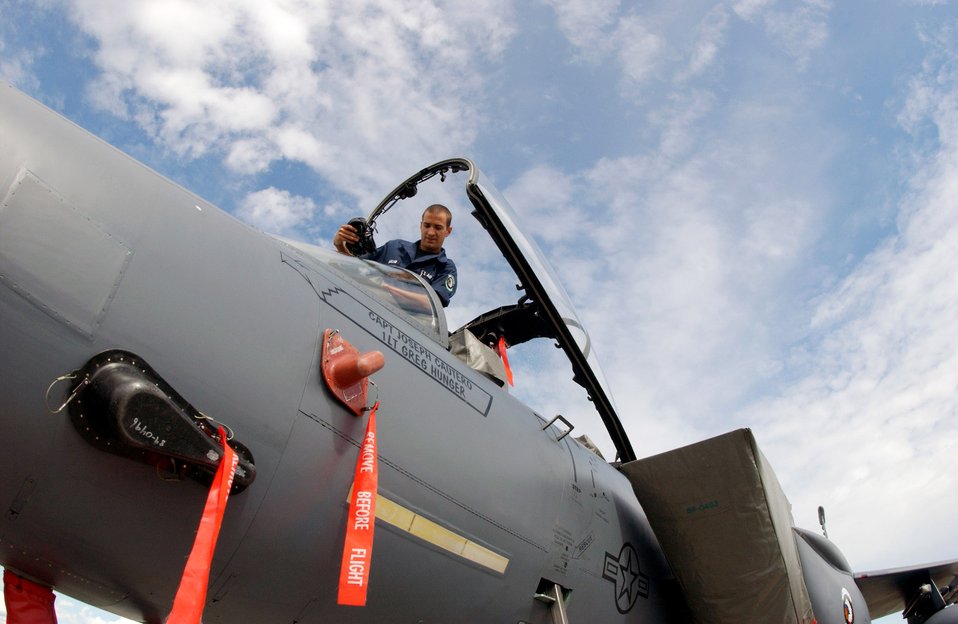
Maintaining aircraft at Red Flag-Alaska 2007

Airman 1st Class Harrison McMillan climbs into the cockpit as he and other maintainers toubleshoot the landing gear on an F-15E Strike Eagle July 12 that is participating in Red Flag-Alaska 2007 at Eielson Air Force Base, Alaska. Red Flag-Alaska 07-3 is a Pacific Air Forces-directed field training exercise for U.S. and coalition forces flown under simulated air-combat conditions. Airman McMillan is assigned to the 335th Aircraft Maintenance Unit at Seymour Johnson AFB, N.C.